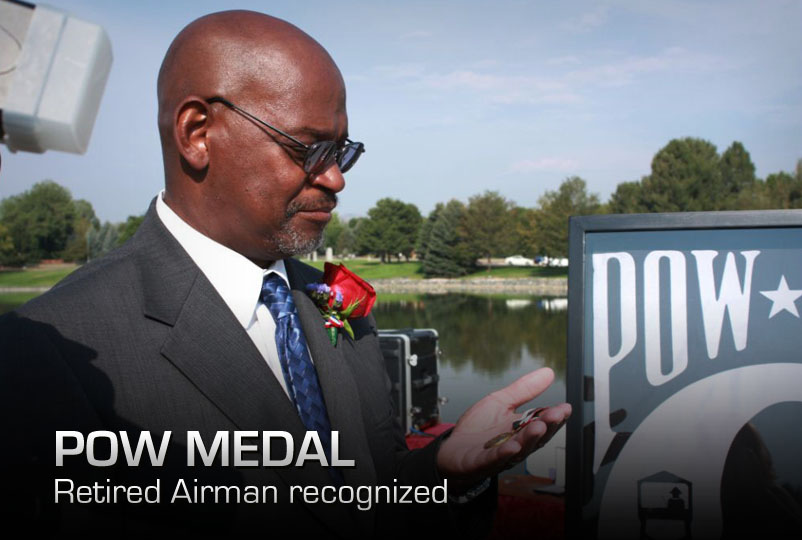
Days in the dark

Retired Master Sgt. James Hughes holds the POW Medal at Fort Logan National Cemetery, Denver, Colo., Aug. 22, 2012. Hughes spent 16 days as hostage to Iranian militants in Tehran, Iran, after they stormed the U.S. Embassy on Nov. 4, 1979.